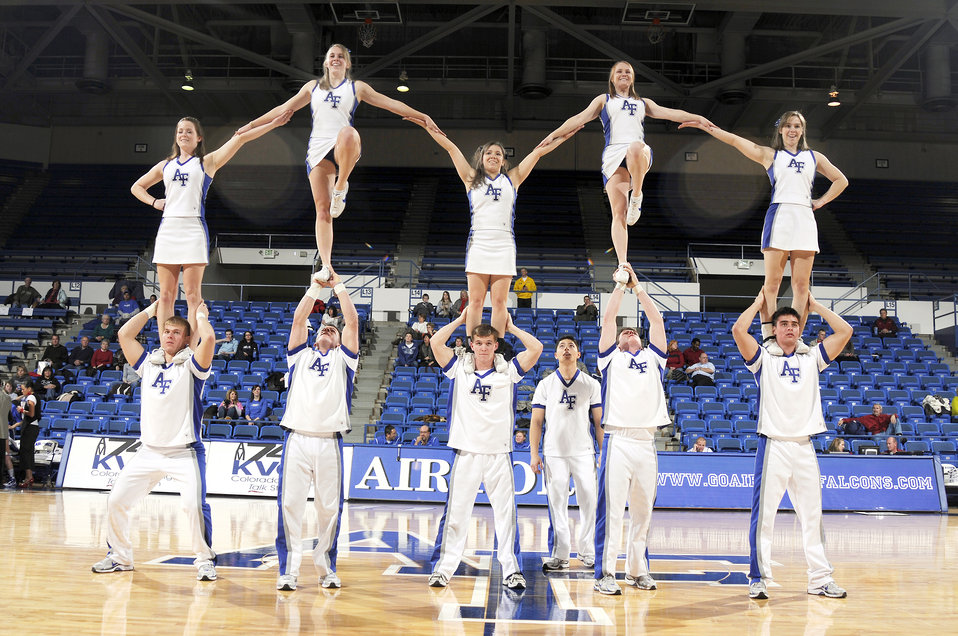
Air Force Academy

U.S. Air Force Academy, CO -- The Falcons cheer team performs during a time out as the Lady Falcons lost to the Denver Pioneers 64-62 at Clune Arena Dec 9. Air Force returns to action Saturday, Dec 19, hosting Bradley.